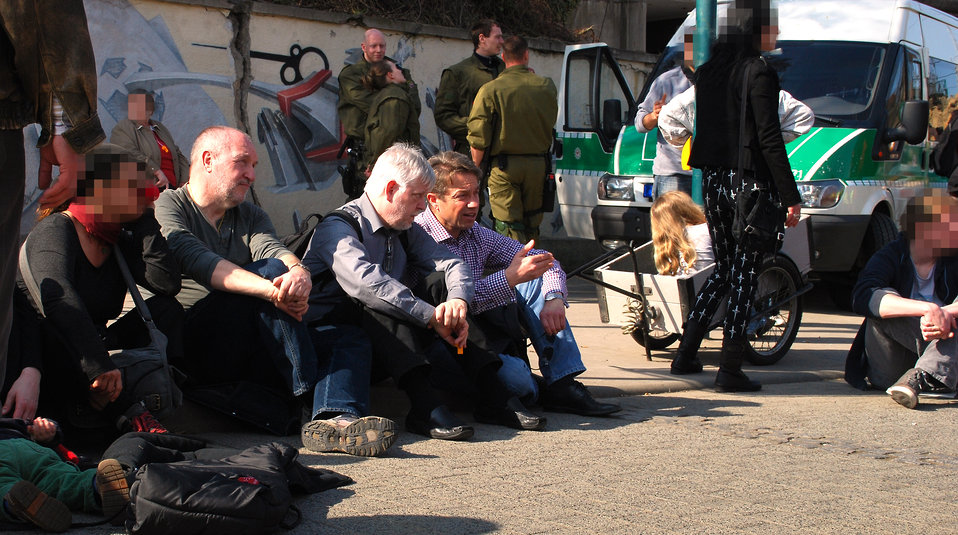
Proteste gegen den Nazi-Aufmarsch am 24.3.2012 in Frankfurt (Oder), mit Helmuth Markov, Finanzminister des Landes Brandenburg, Günter Baaske, Sozialminister des Landes Brandenburg und Axel Henschke, Mitglied des Landtages Brandenburg